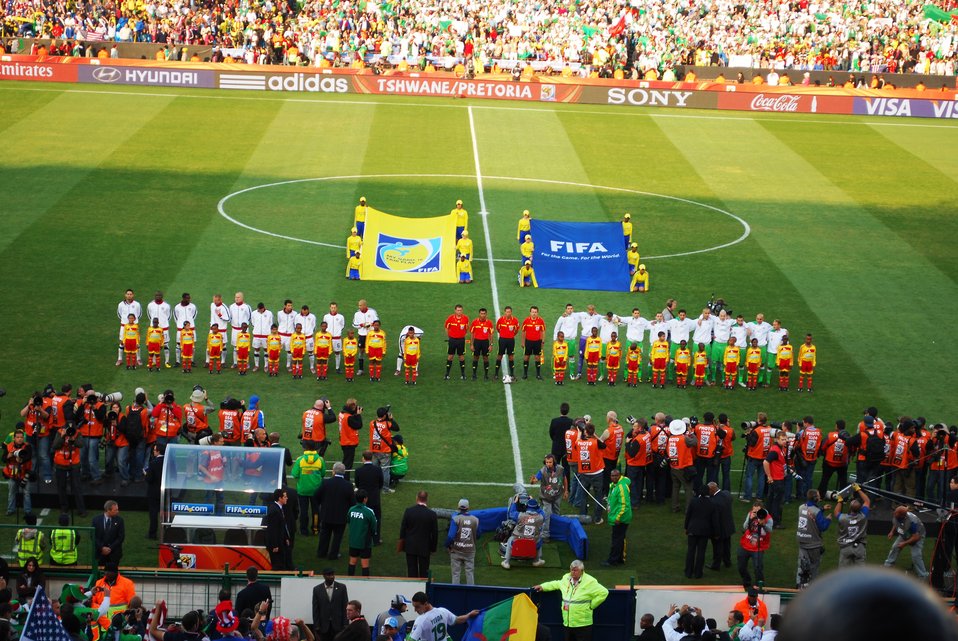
Players and Fans Stand for National Anthems

Players and fans stand for the national anthems of the United States and Algeria are played before their World Cup soccer match at Loftus Versfeld Stadium in Pretoria, South Africa, on June 23, 2010.